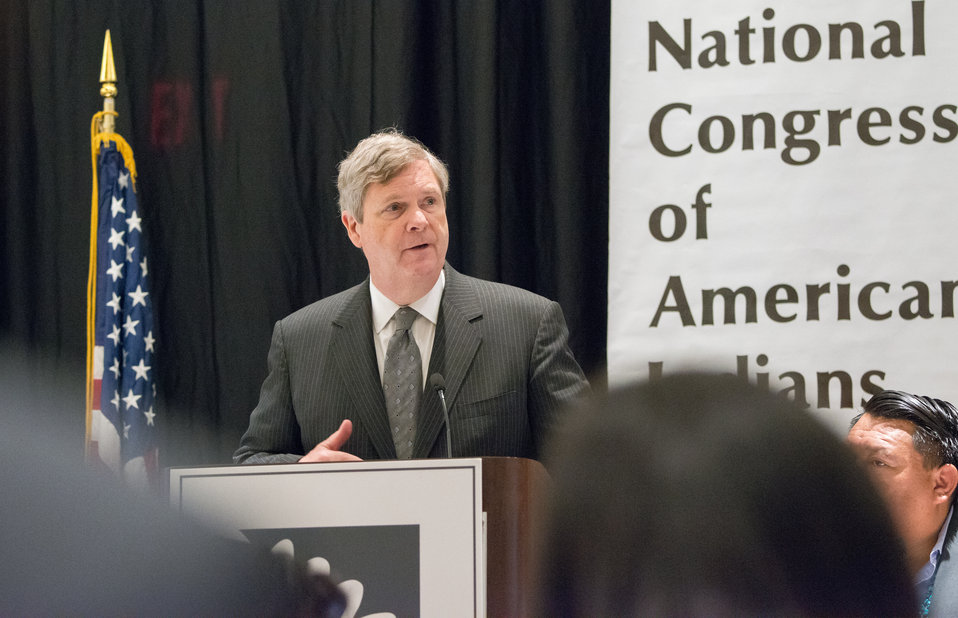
Agriculture Secretary Tom Vilsack addresses the 2014 National Congress of American Indians (NCAI) Executive Council Winter Session at the Westin Washington City Center in Washington, D.C. on Thursday, Mar. 13, 2014.